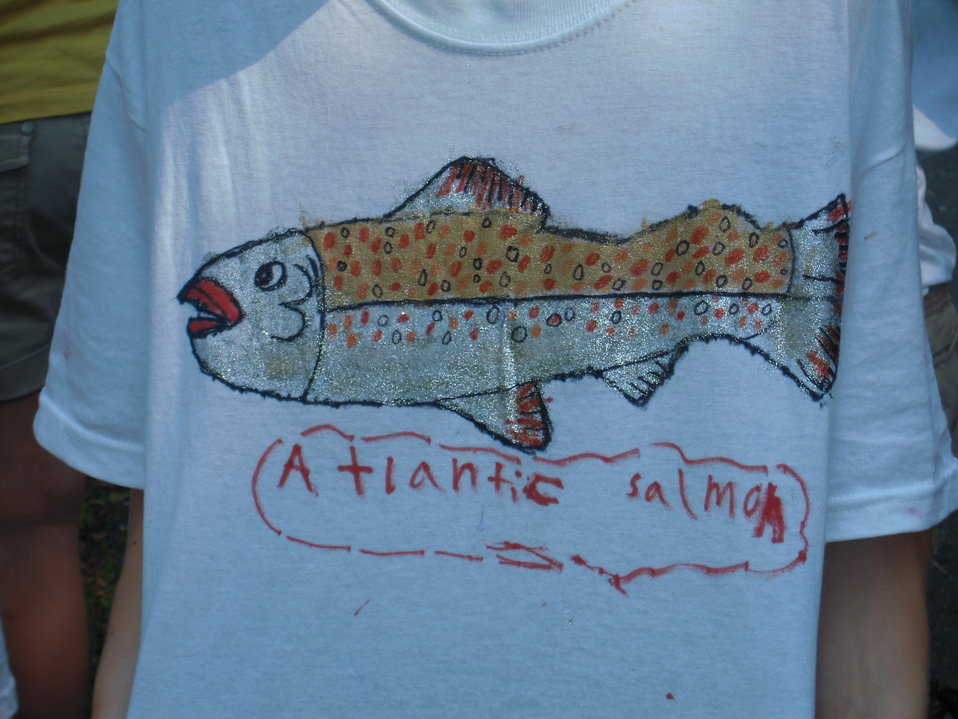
Student-made Atlantic salmon T-shirts